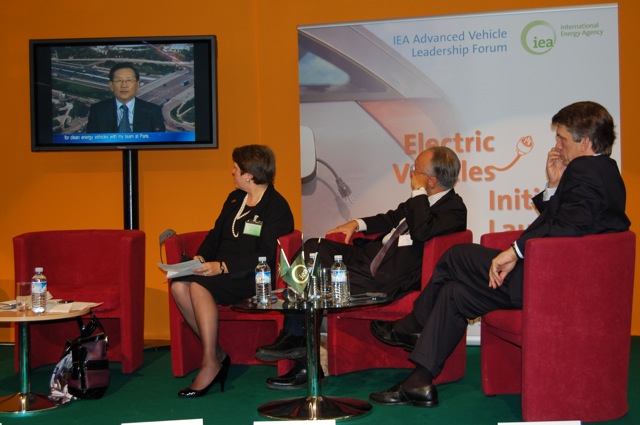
David Sandalow at the Paris Auto Show